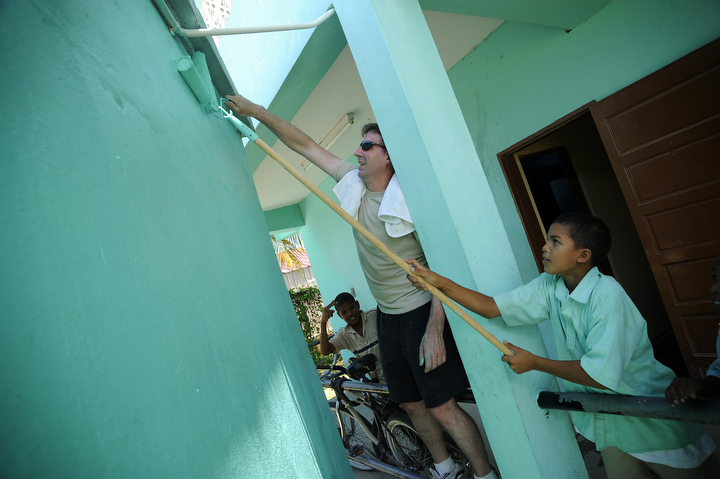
Operation Southern Partner paints a brighter future in Belize

David, a child enrolled into the Stella Maris School for the Physically Disabled, helps an Airman deployed here for Operation Southern Partner with painting the exterior of the school June 8 in Belize City, Belize. Airmen deployed here for Operation Southern Partner worked together to enhance the school's appearance while building stronger relationships between the U.S. and Belize.